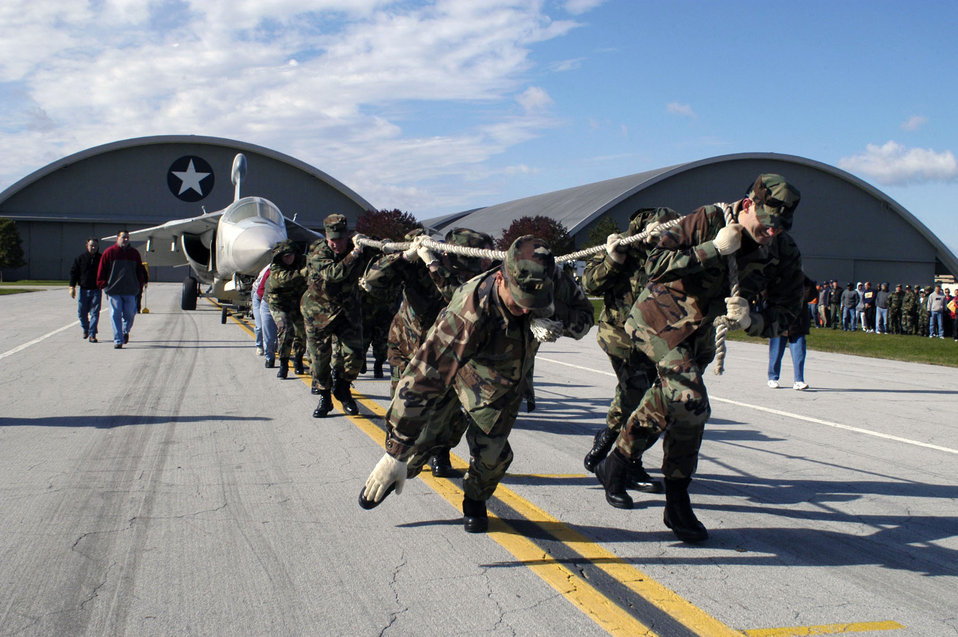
Teams pull for charity

A team begins to pull a 60,000 pound EF-111 Raven during the 2006 CFC Aircraft Pull Oct. 12 at the National Museum of the U.S. Air Force at Wright-Patterson Air Force Base, Ohio. Teams pull the aircraft as far as they can in 45 seconds. The team pulling the aircraft the greatest distance is the winner. Team entry fees are donated to the CFC.